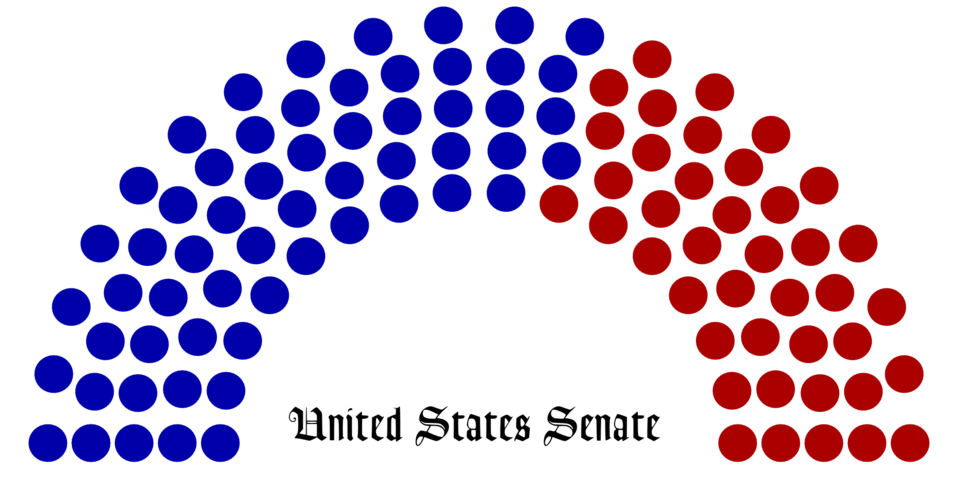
Breakdown of political party representation in the United States Senate during the 111th Congress.
Blue: Democrat
Red: Republican
Blue/Yellow: Independent Democrat (caucused with Democrats)
Blue/Gray: Independent (caucused with Democrats)
Black Unresolved